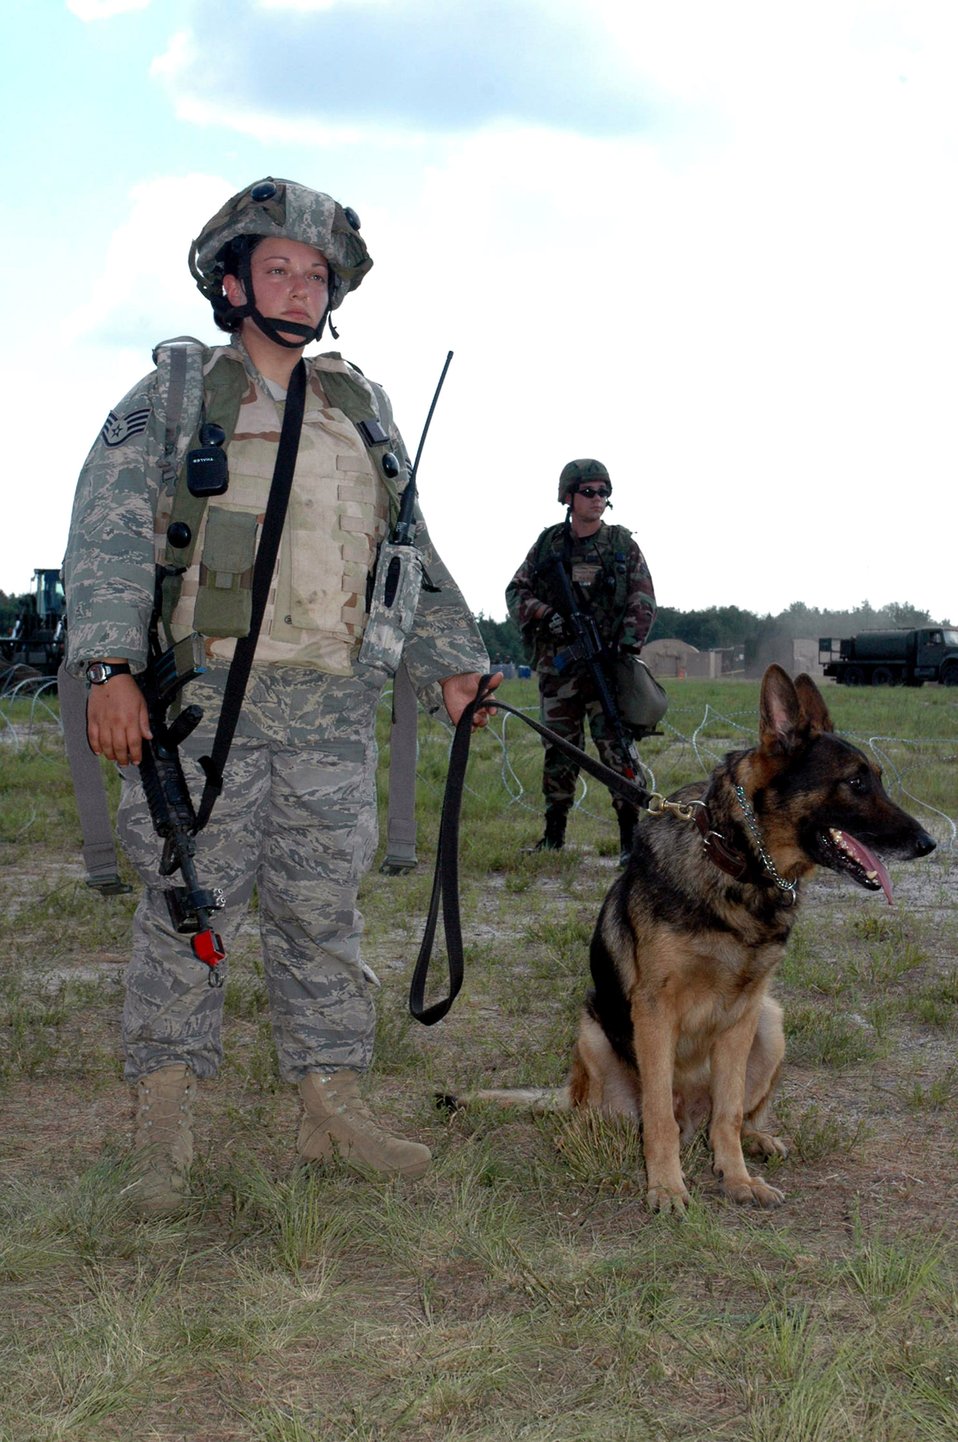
After one year, Phoenix Warrior course soaring high

Staff Sgt. Pamela Lowande and her military working dog, Ziko, participate in a scenario Aug. 28 during Air Force Exercise Eagle Flag 07-6 at Naval Air Engineering Station Lakehurst, N.J. They were Phoenix Warrior students participating in the exercise. The exercise is operated by the U.S. Air Force Expeditionary Center's 421st Combat Training Squadron from Fort Dix, N.J. Sergeant Lowande and Ziko are from the 81st Security Forces Squadron at Keesler Air Force Base, Miss.